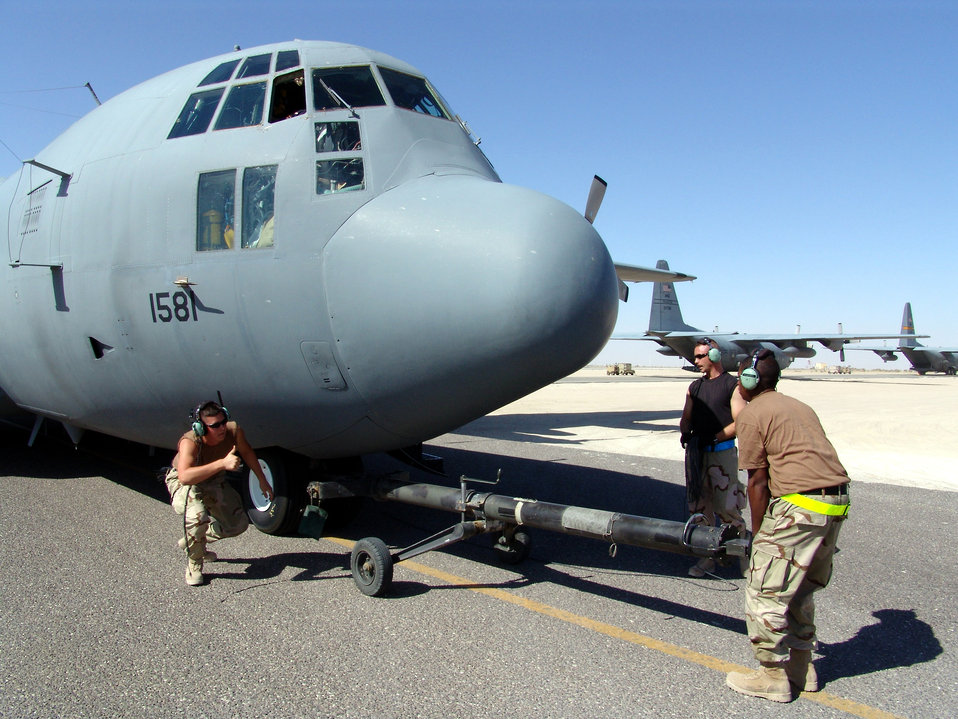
Sending a Compass Call

SOUTHWEST ASIA -- Airman Jeremy Leep (left), Airman 1st Class Randolph Holley (holding the tow bar) and Senior Airman Sean Dicicco hook up a tow bar to an EC-130H Compass Call aircraft at a forward-deployed location. Equipment on this modified C-130 prevents or degrades enemy communications. The Airmen are assigned to the 43rd Expeditionary Electronic Combat Squadron and deployed from Davis-Monthan Air Force Base, Ariz.